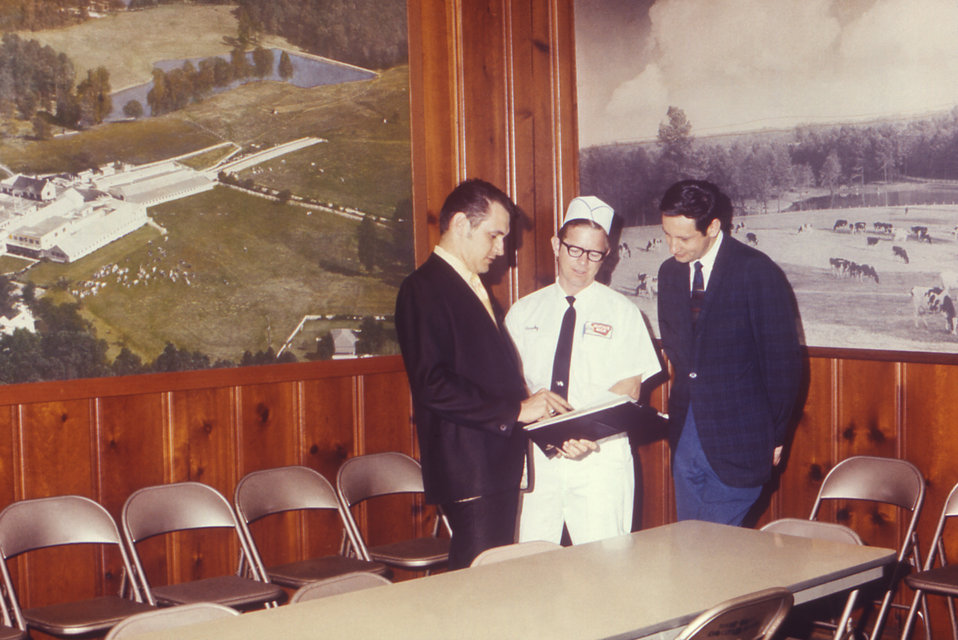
In this 1970 photograph, two CDC sanitarians Frank Bran (Rt), and an unidentified official (Lt), were meeting with a dairy technician during an inspection of a milk-production facility.